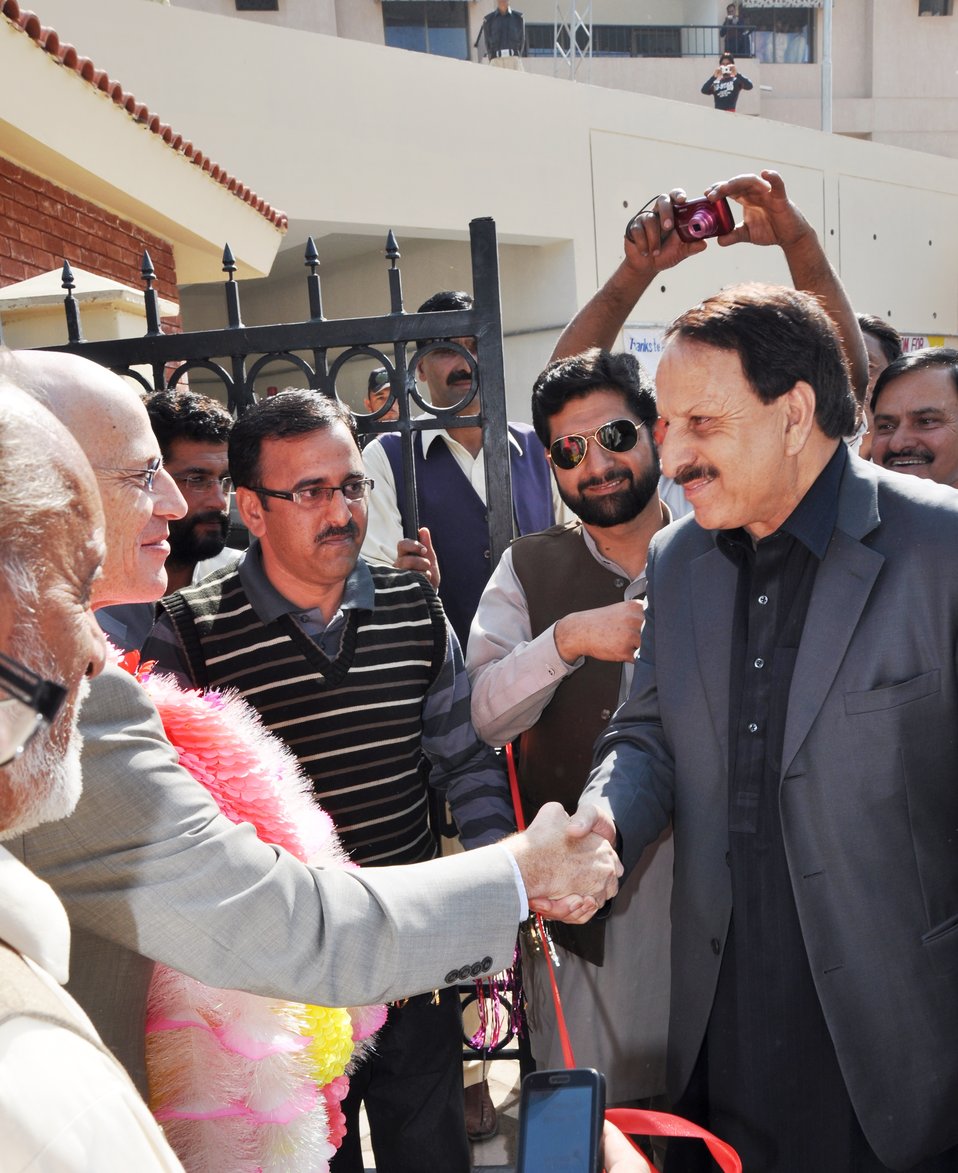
Bagh 02